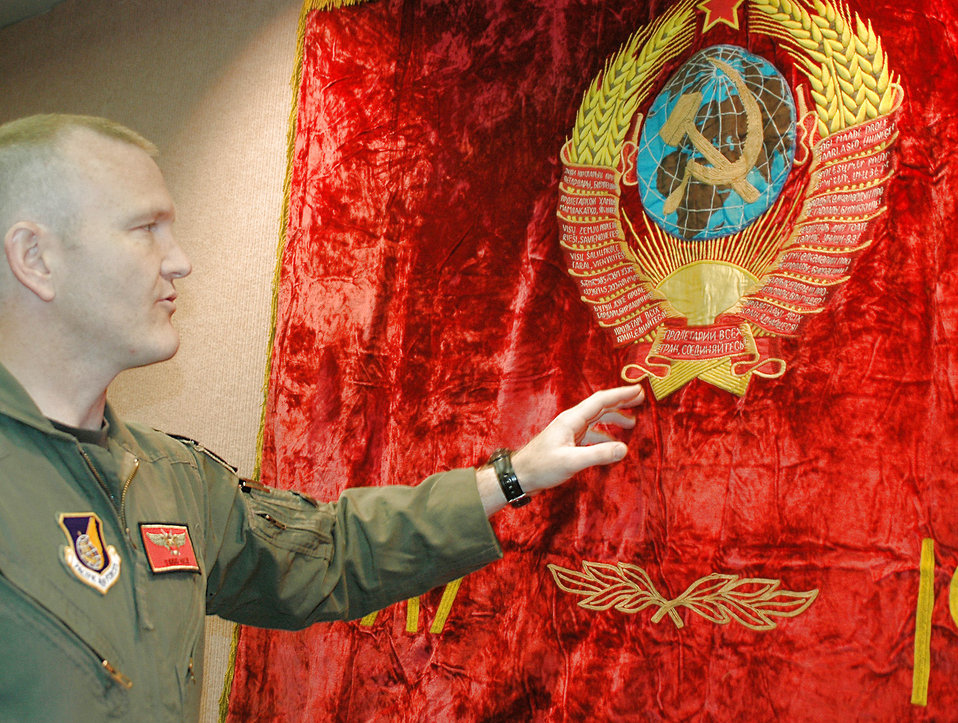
Replicating the threat

Capt. Todd Hale shows an authentic former Soviet Union flag displayed in the 18th Aggressor Squadron June 9 at Eielson Air Force Base, Alaska. The flag lends to the ambience pilots created to place themselves in the